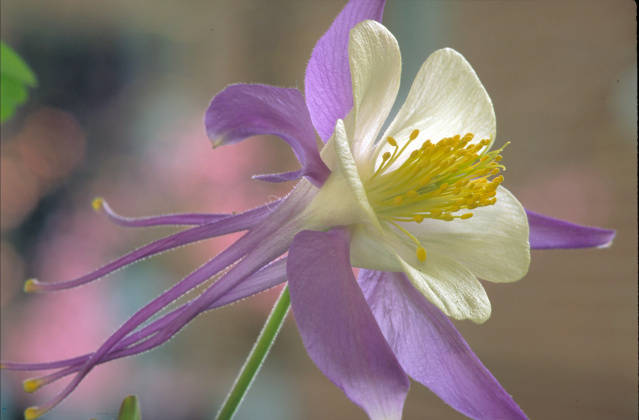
Rocky Mountain columbine